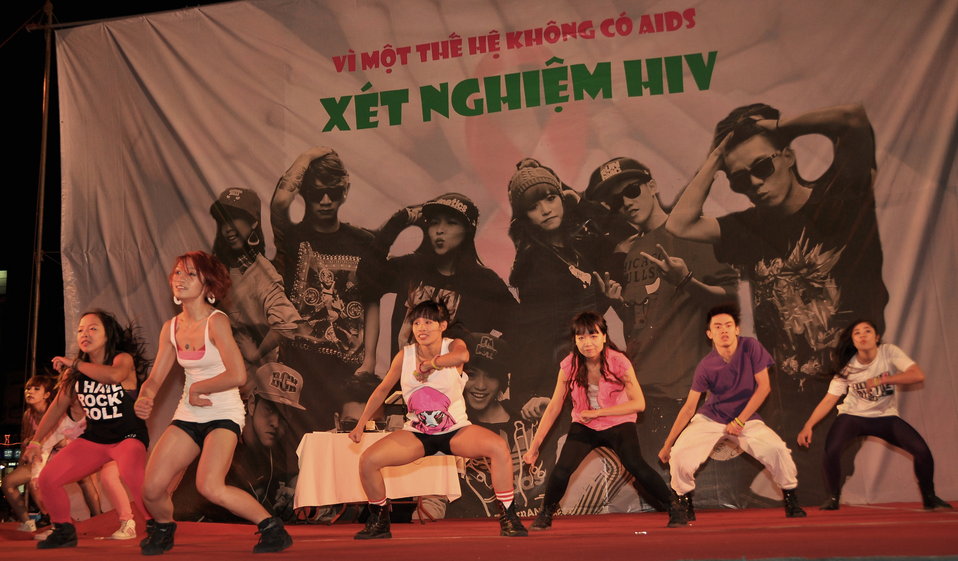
USAID and PEPFAR supports an outdoor concert to promote Vietnam's national action month for HIV

Hanoi, December 18, 2012.